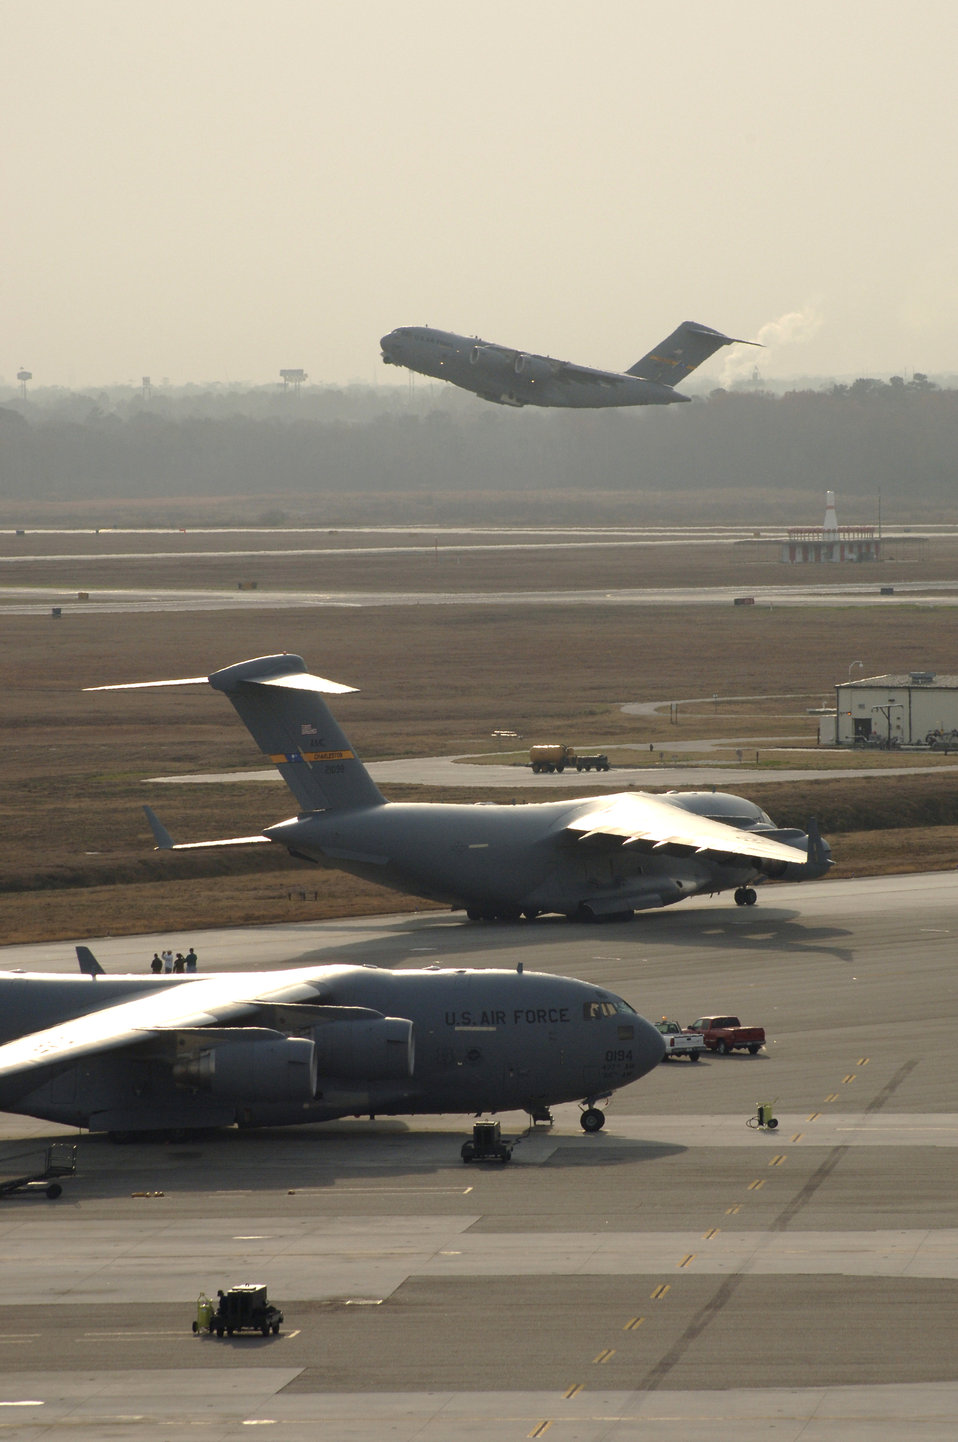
20-Ship C-17 Formation

A C-17 Globemaster III takes off as other aircraft prepare to launch Dec. 21 at Charleston Air Force Base, S.C. Aircrews consisting of active-duty Airmen and reservists train simulating the complexity of this type of mission. The training mission included airdrops over North Auxiliary Airfield in Orangeburg, S.C., aerial refueling and low-level tactical training. Charleston AFB members launched the largest formation of C-17's to take flight from a single base.